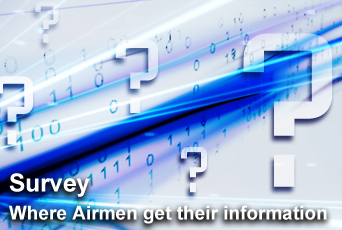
New survey aims to streamline information for Airmen

A randomly selected group of Airmen and Air Force civilian employees will soon receive an e-mail invitation to complete an online questionnaire to share their views on information in order help streamline the way information is communicated.